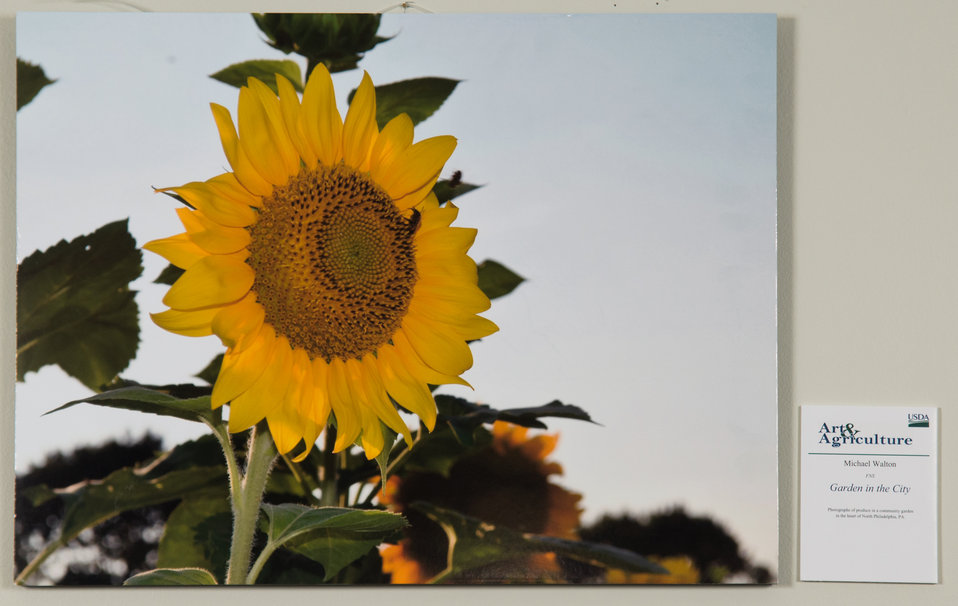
Online Viewer's Choice entries of the 2013 Art & Agriculture, Tuesday, July 9, 2013, in the South Building, Washington, D.C. Themes were expressed by employees from across the department and the contest was open to full-time and part-time USDA employees. Winning artwork will be displayed till the end of the year. U.S. Artistic expression is a creative outlet that is vital for an individual to grow and develop.